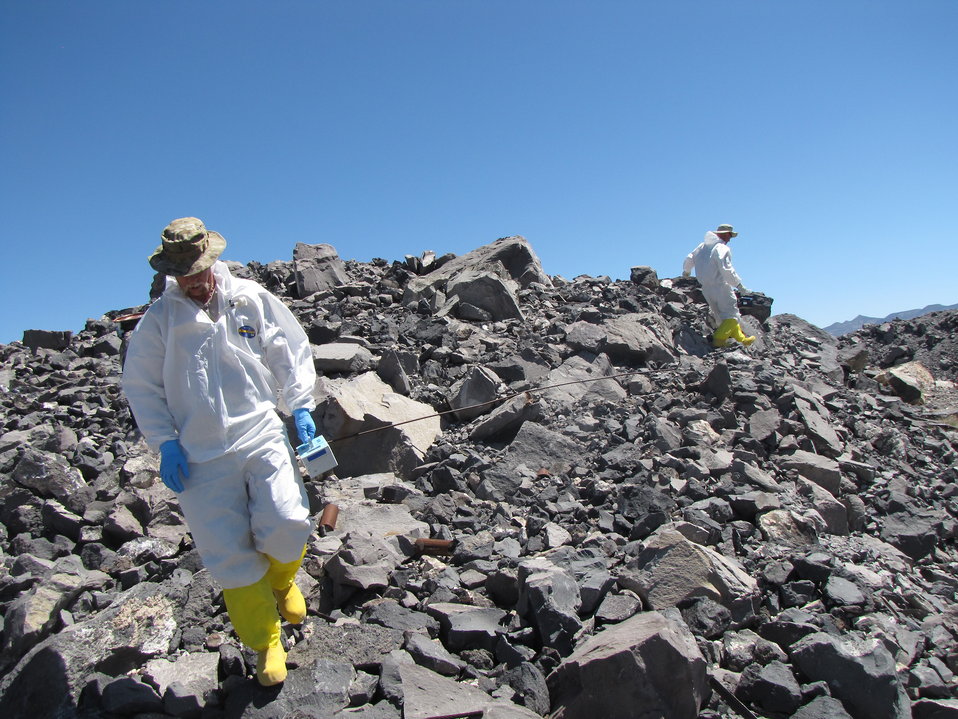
Nevada test location closures

A significant amount of Recovery Act funding supported characterizing or closing a number of historic nuclear test locations at NNSS, which remains one of the largest restricted-access areas in the U.S. In August 2011, NSO completed closure activities at Danny Boy, one of 68 underground tests conducted at NNSS from 1961 to 1962. Workers pictured here recorded radiological measurements from the rubble surrounding the Danny Boy crater in July 2010. Closure activities at Danny Boy and other key historic NNSS test locations such as Sedan, Schooner, and Buggy, represent a significant achievement for the DOE Complex.